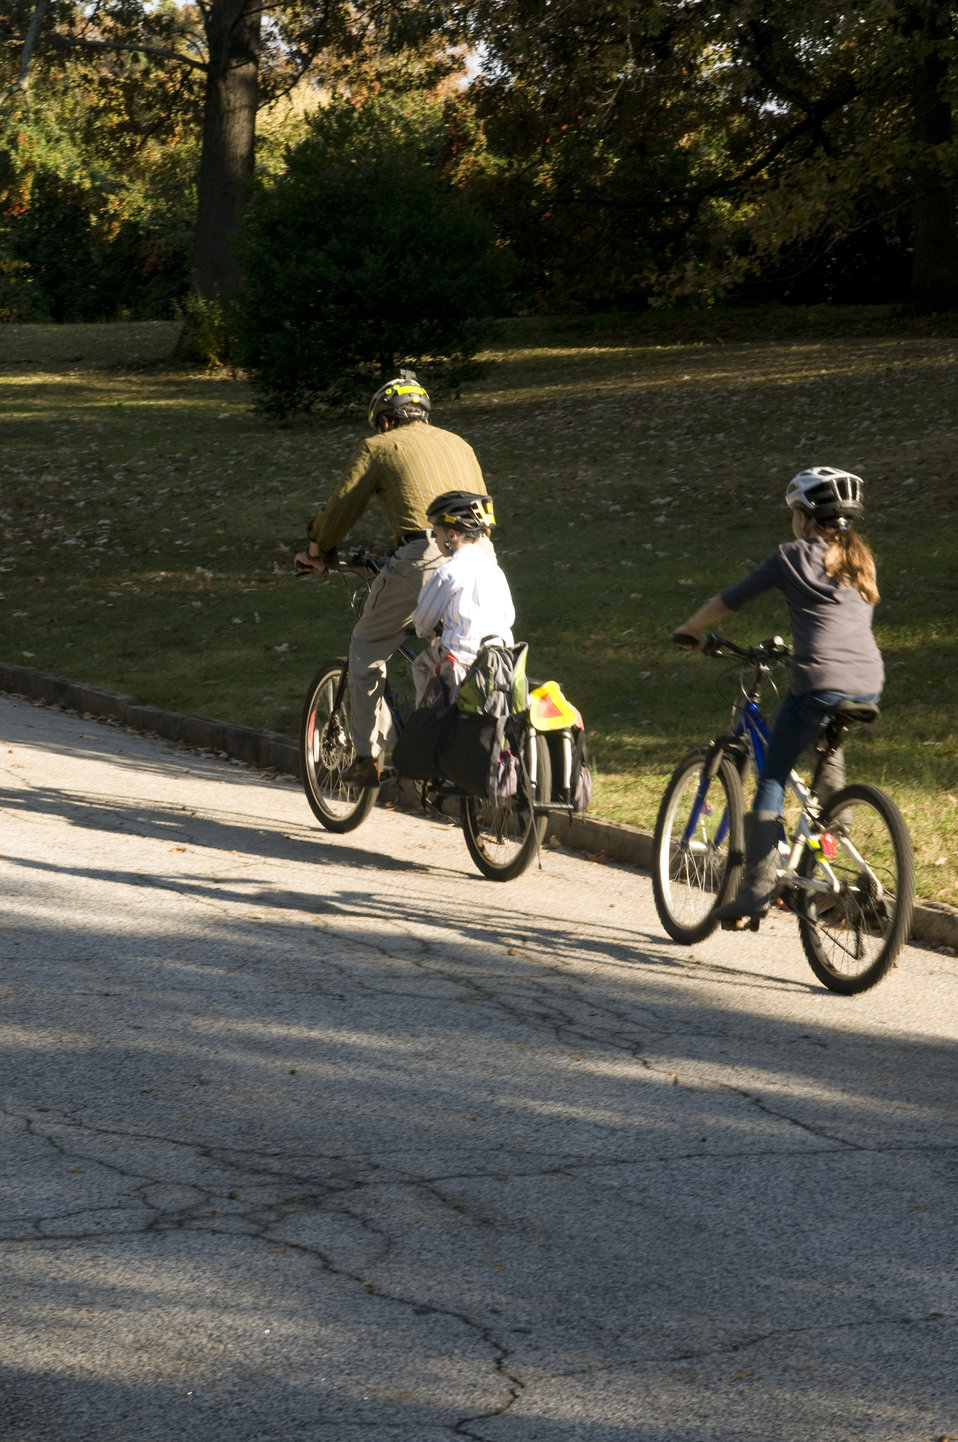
Protective measures having been taken by a careful father, this dad and his two young children were on their way, as they embarked on a Georgian bicycle trip. The daughter was riding her own bike, while the son, seated in a small child-safe bicycle seat, was riding on the same bike as his dad. All three were wearing aerodynamic safety helmets, and clothing to protect them from the sun, wind and insects.